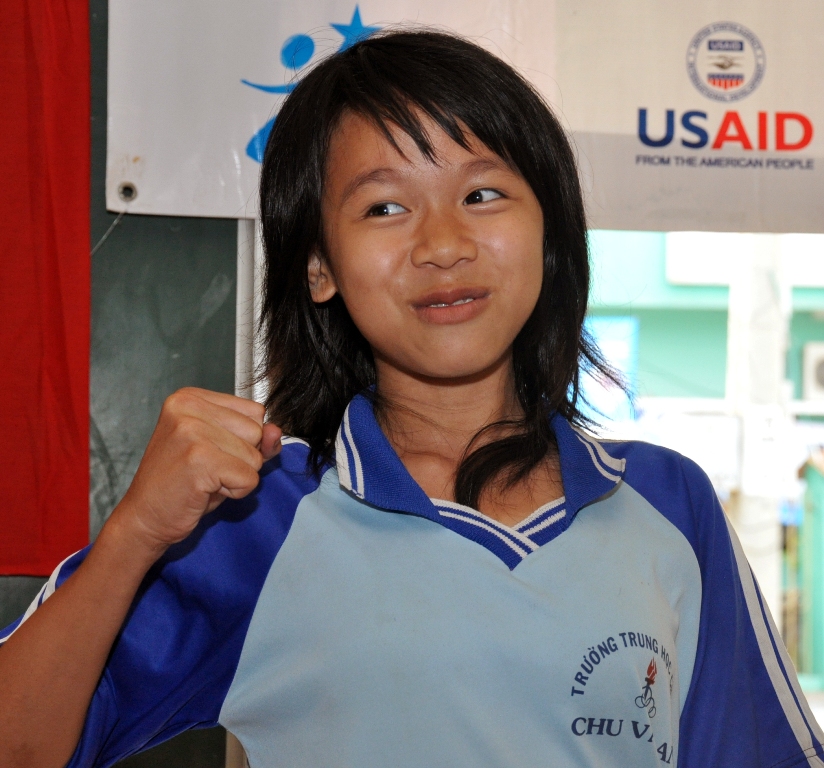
USAID supports girls education

A middle school student in southern Vietnam profits from support that helps keep her in school and be recognized for her high marks.